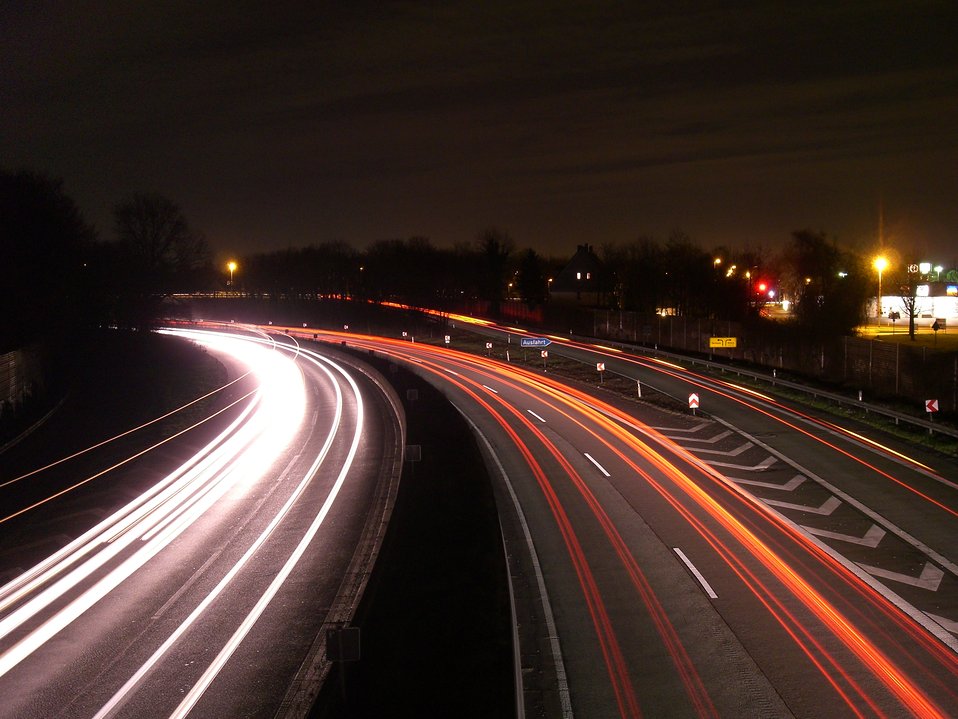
Deutsch: BAB 40 in Styrum bei Nacht